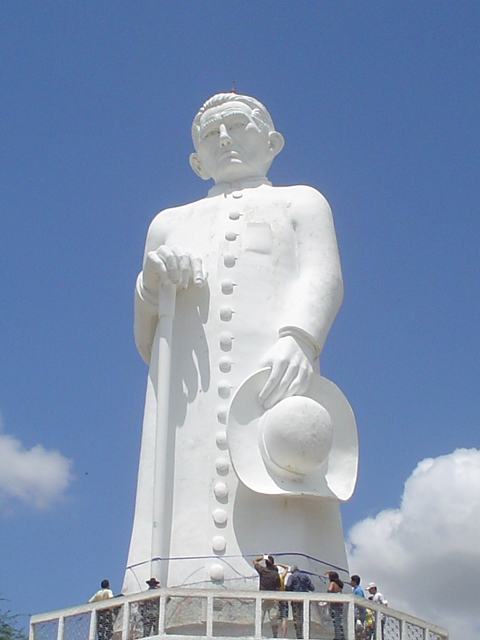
Foto tirada pelo autor na cidade de Juazeiro do Norte em Jan 2006, outro angulo.